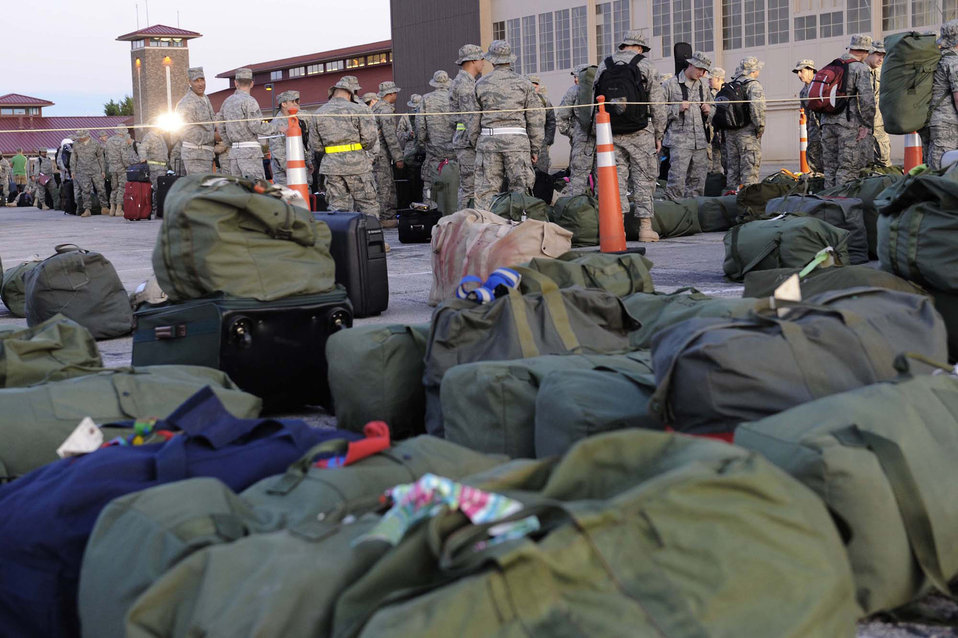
Airmen deploy to Southwest Asia

Members of the 28th Bomb Wing prepare to in-process before deploying from Ellsworth Air Force Base, S.D. Ellsworth Airmen in various roles deployed in support of operations in Southwest Asia.